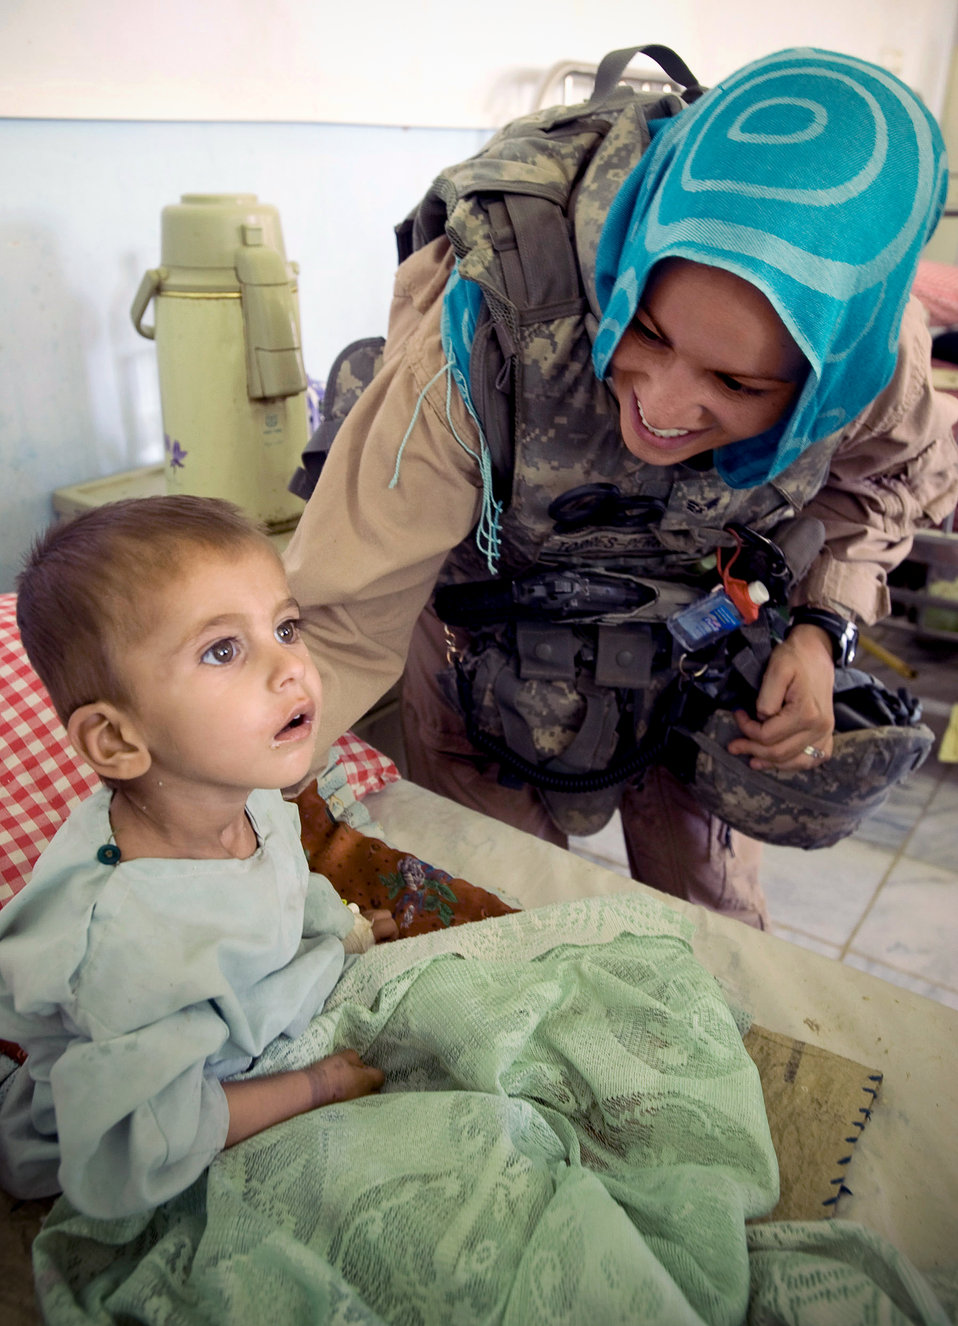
Feeling better?

Senior Airman Felicita Torres-Perkins, a member of the Zabul Provincial Reconstruction Team, comforts a young Afghan girl Aug. 10 at the Qalat Hospital in Qalat, Afghanistan. She wears the scarf to honor the customs of this conservative region of the country.